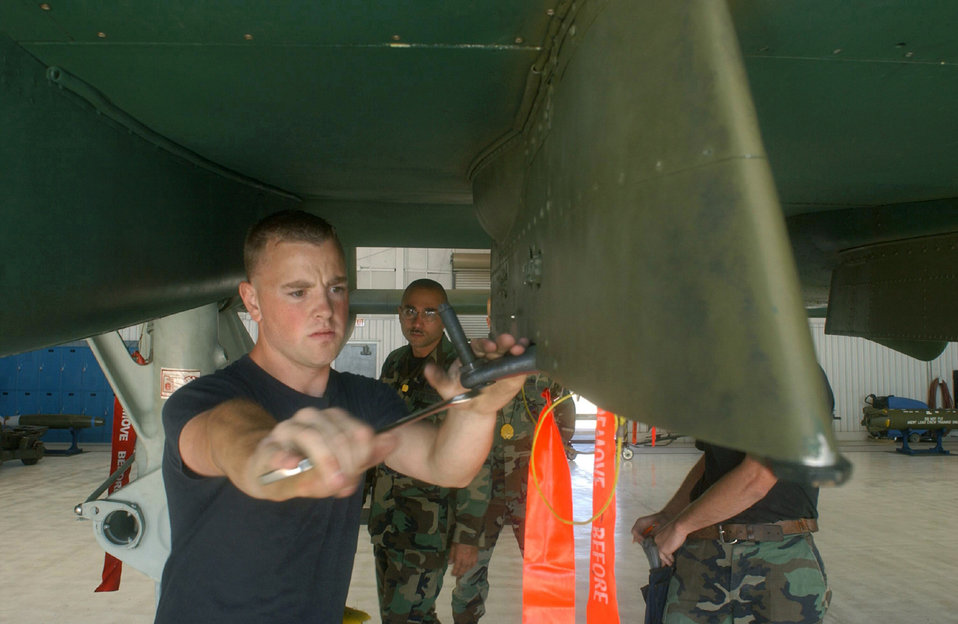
Load lovers

DAVIS-MONTHAN AIR FORCE BASE, Ariz. -- Airman 1st Class Chris Langbehn loosens a lug nut on a rack where an MK-82 bomb will be loaded during a weapons load crew competition here. He is assigned to the 355th Aircraft Maintenance Squadron.